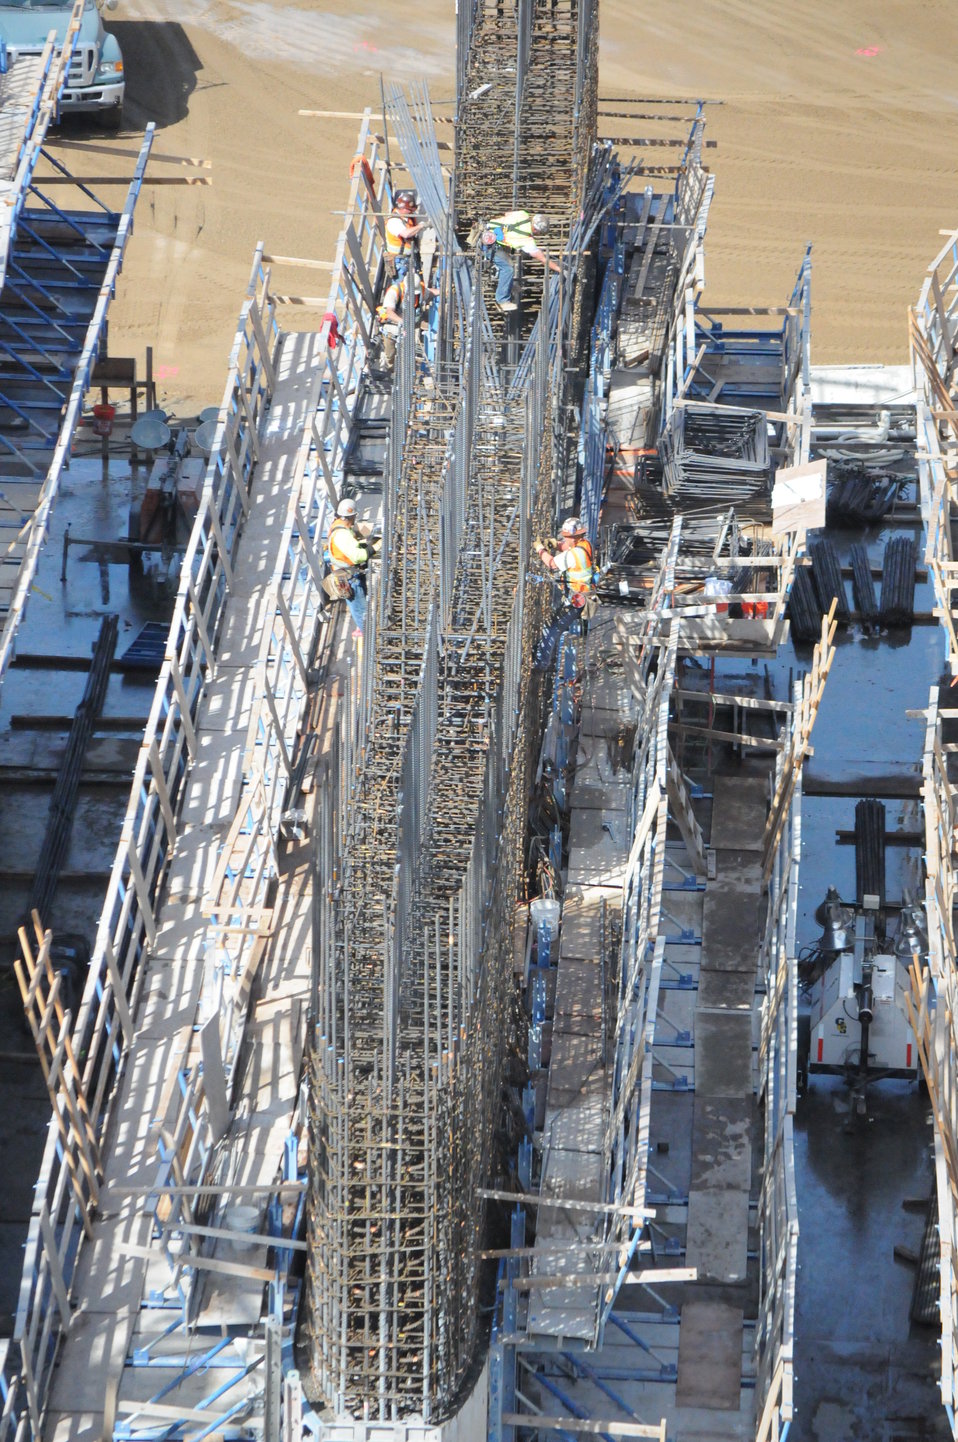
Placing Steel Rebar

Contractors working for the U.S. Army Corps of Engineers Sacramento District construct the support system for the rising Folsom Dam auxiliary spillway on March 14, 2013.